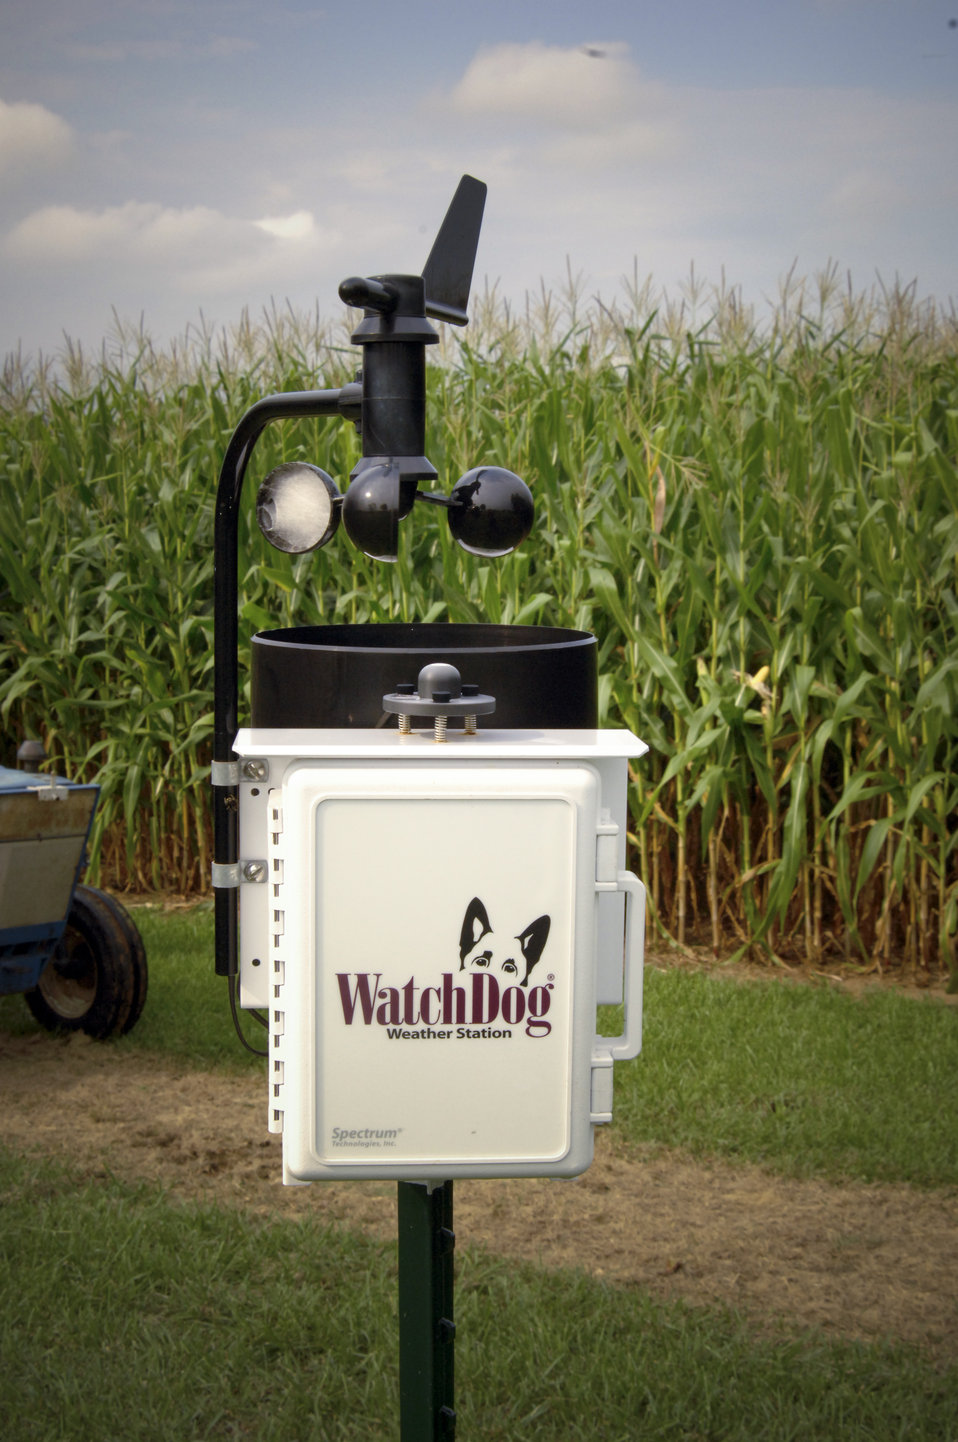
This Watch Dog weather station is part of the U.S. Department of Agriculture (USDA) Natural Resources Conservation Service’s (NRCS) Chesapeake Bay Watershed Initiative (CBWI). The weather station will detect and store wind direction, wind speed, temperature, relative humidity and rainfall rate. Timely and accurate weather information is critical to many aspects of life in Virginia. Each and every day, farmers, engineers and utility operators make decisions that depend on the weather. When hazardous weather is imminent, public safety depends on knowing the location, severity and movement of storms. Each of the new automated weather stations has a 10-meter tall instrument tower outfitted with sensors to measure precipitation, wind speed and direction, solar radiation, air temperature and relative humidity. All stations are powered by solar panels with a power line back up if it’s available. Communications and data retrieval will be made via a digital modem.